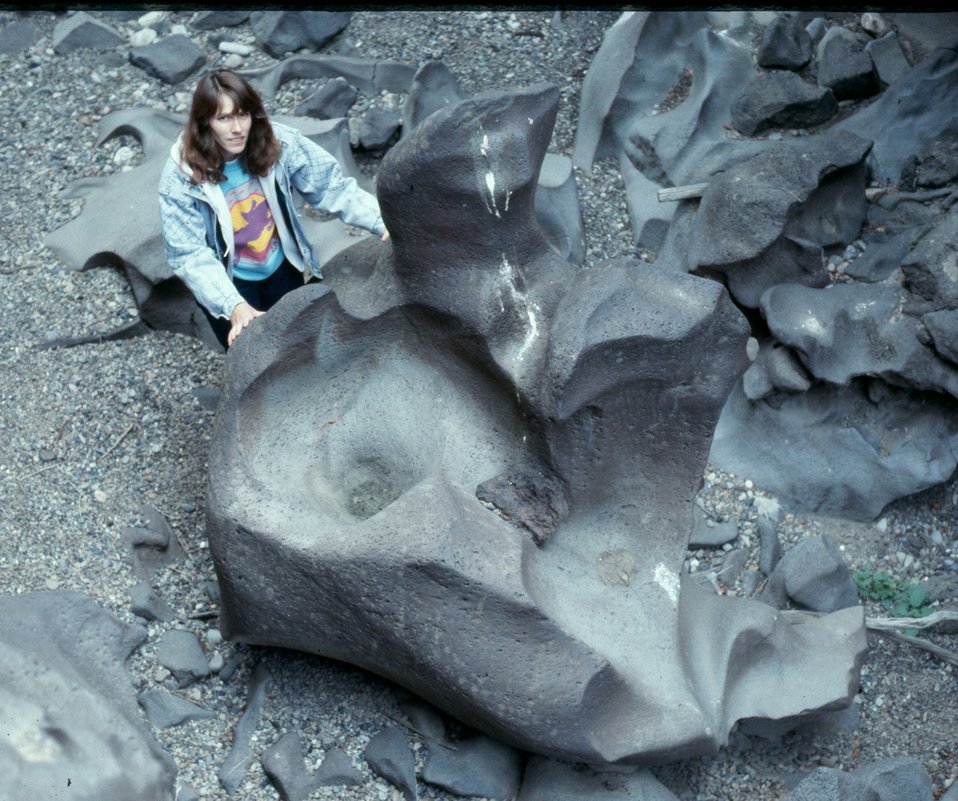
Big boulder Shoshone Field Office USRD Upper Snake River District